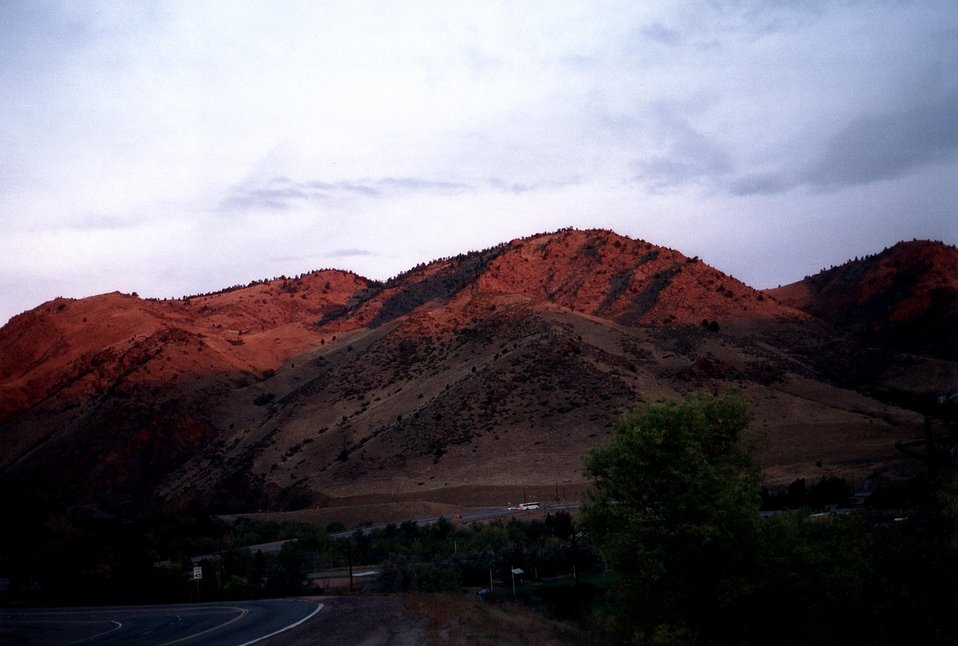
SURROUNDING AREA NEAR DOE'S NATIONAL RENEWABLE ENERGY LABORATORY, GOLDEN, COLORADO.